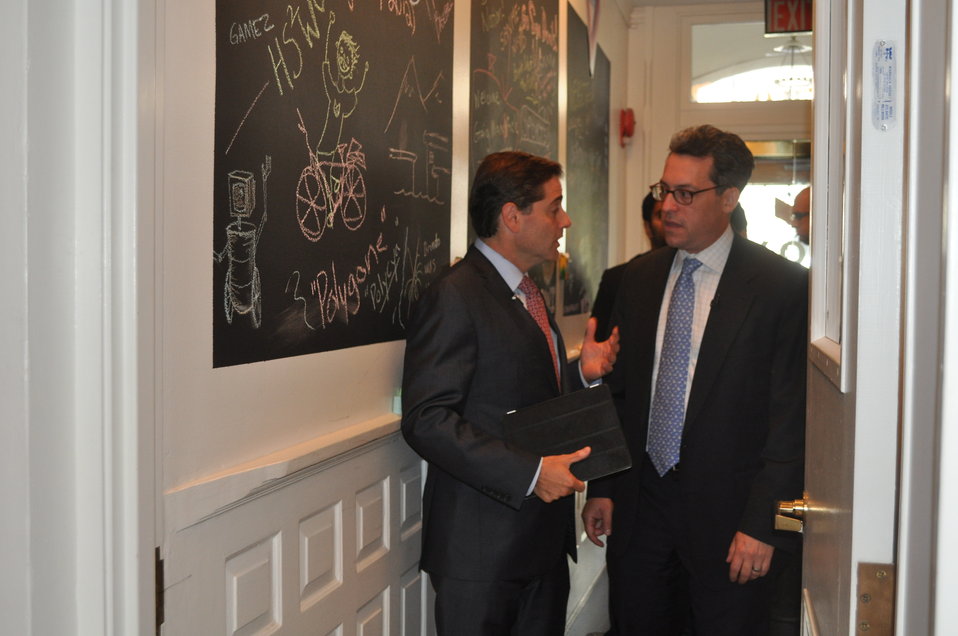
Broadband Challenges and Opportunities, at Vox Media